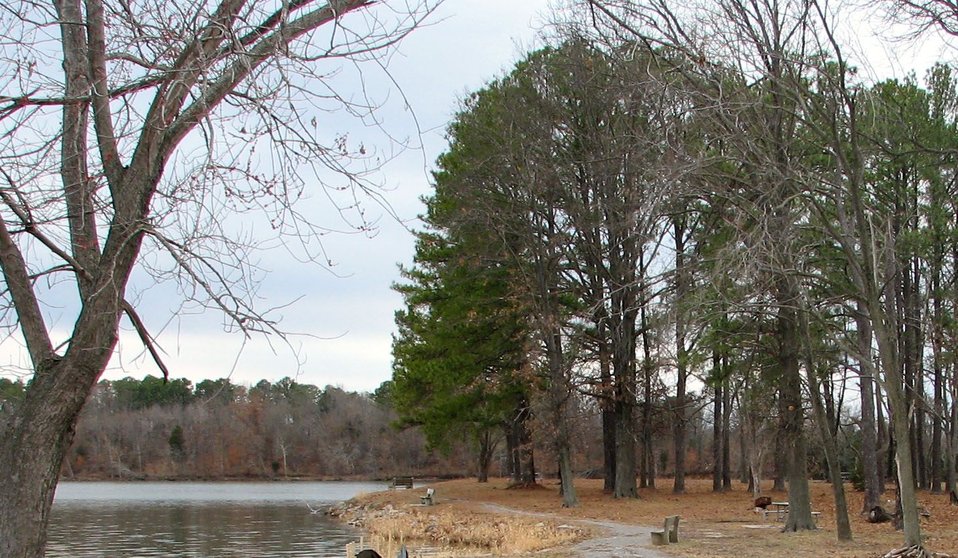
IL Bogart Point, Crab Orchard National Wildlife Refuge